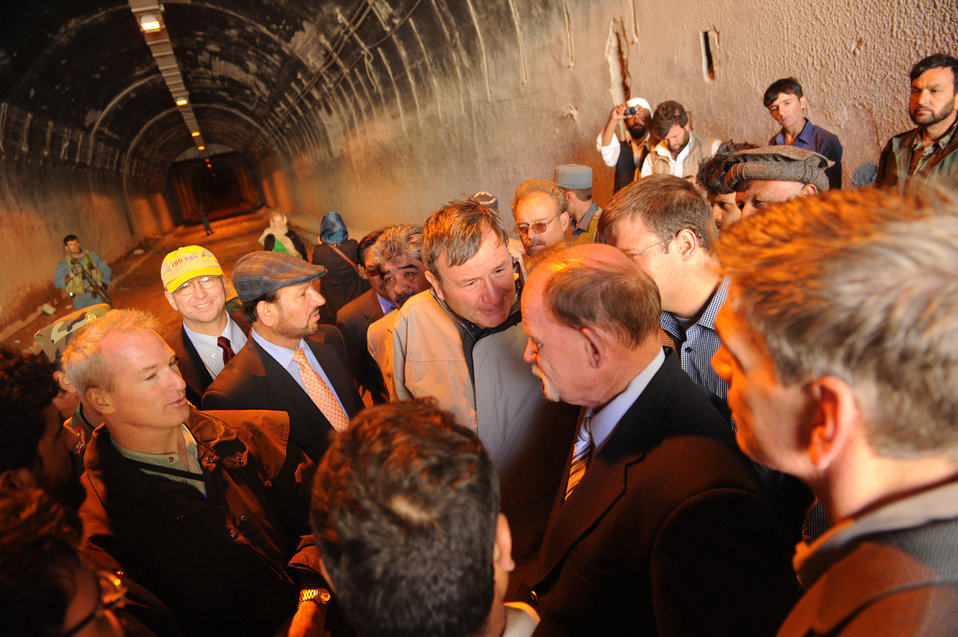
U.S. Ambassador Karl W. Eikenberry attends a ceremony to mark the beginning of renovations at the Salang Tunnel on the border of Parwan and Baghlan Provinces, Afghanistan, on Wednesday, June 15, 2011. (S.K.Vemmer/Department of State)